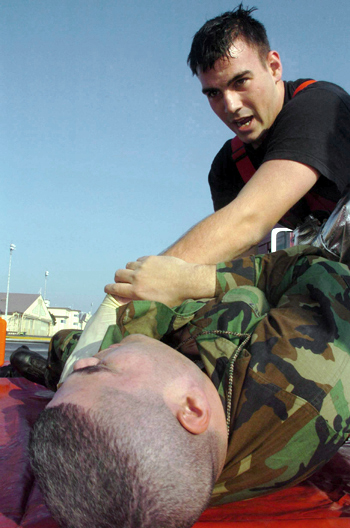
Exercise! Exercise! Exercise!

YOKOTA AIR BASE, Japan -- Airman 1st Class Paul Jarvis, a firefighter from the 374th Civil Engineer Squadron here, treats an